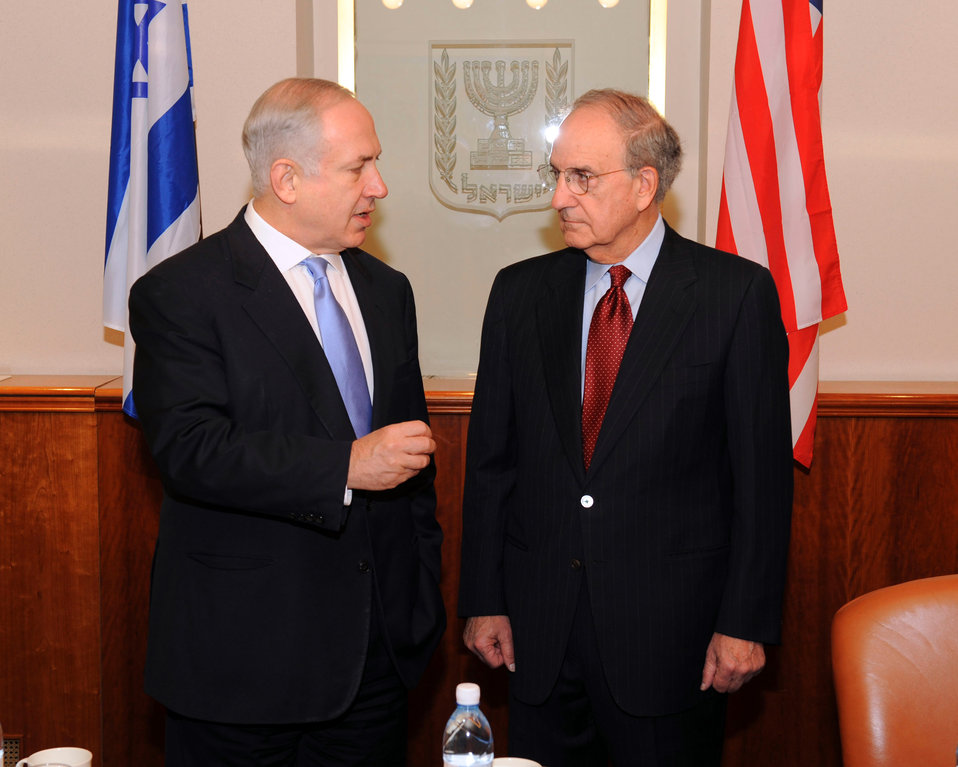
Special Envoy Mitchell Meets With Israeli Prime Minister

U.S. Special Envoy to the Middle East George J. Mitchell meeting with Israeli Prime Minister Benjamin Netanyahu at the Prime Minister Office in Jerusalem, October 30, 2009.